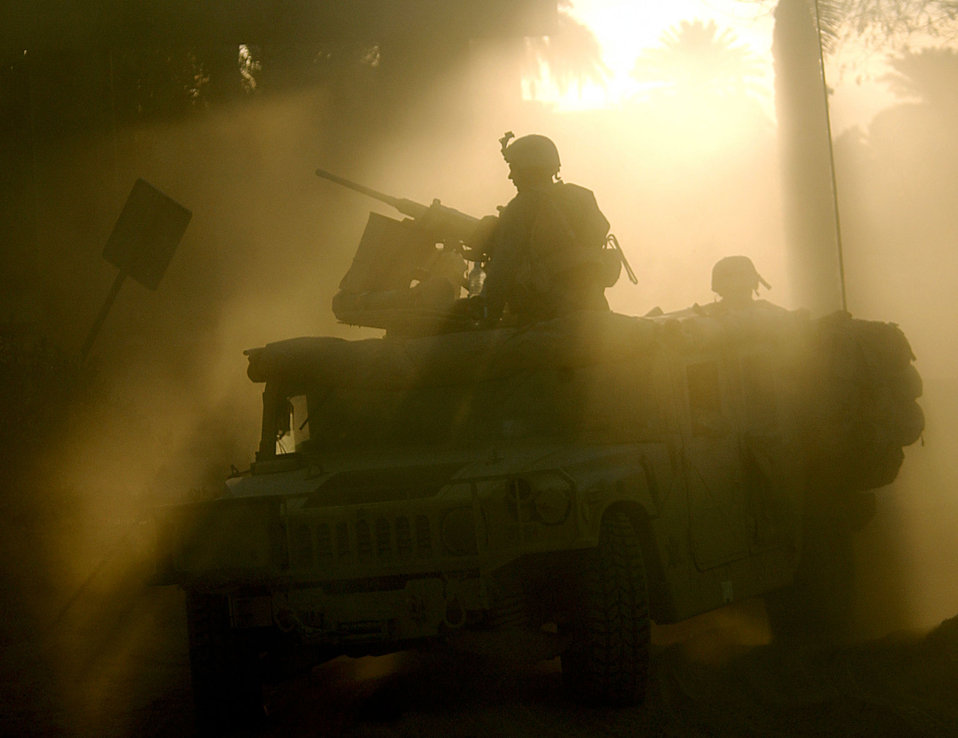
Troops in the mist

OPERATION IRAQI FREEDOM -- Special Operations Forces move through west Baghdad, April 12. Special Operations Forces are patrolling the outer perimeter to provide security for a local hospital in support of Operation Iraqi Freedom.